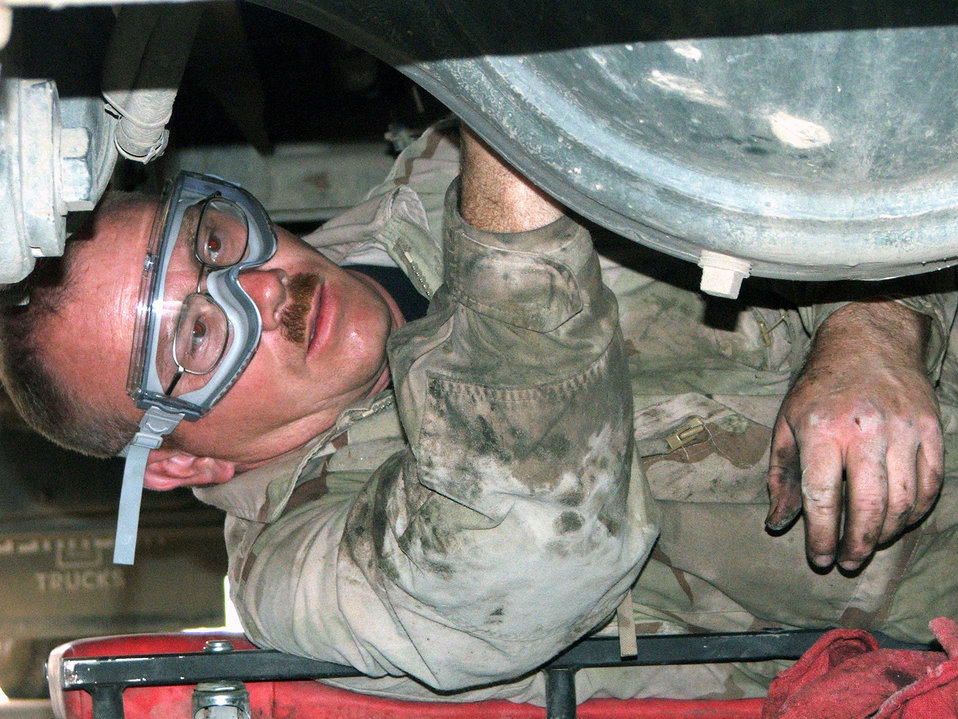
Deployed vehicle maintainers keep wheels turning

KARSHI-KHANABAD AIR BASE, Uzbekistan -- Staff Sgt. Brian Carter works underneath a fuel truck while doing vehicle maintenance here May 7. He is a mechanic with the 416th Expeditionary Mission Support Squadron's vehicle maintenance flight and is deployed from Grand Forks Air Force Base, N.D.